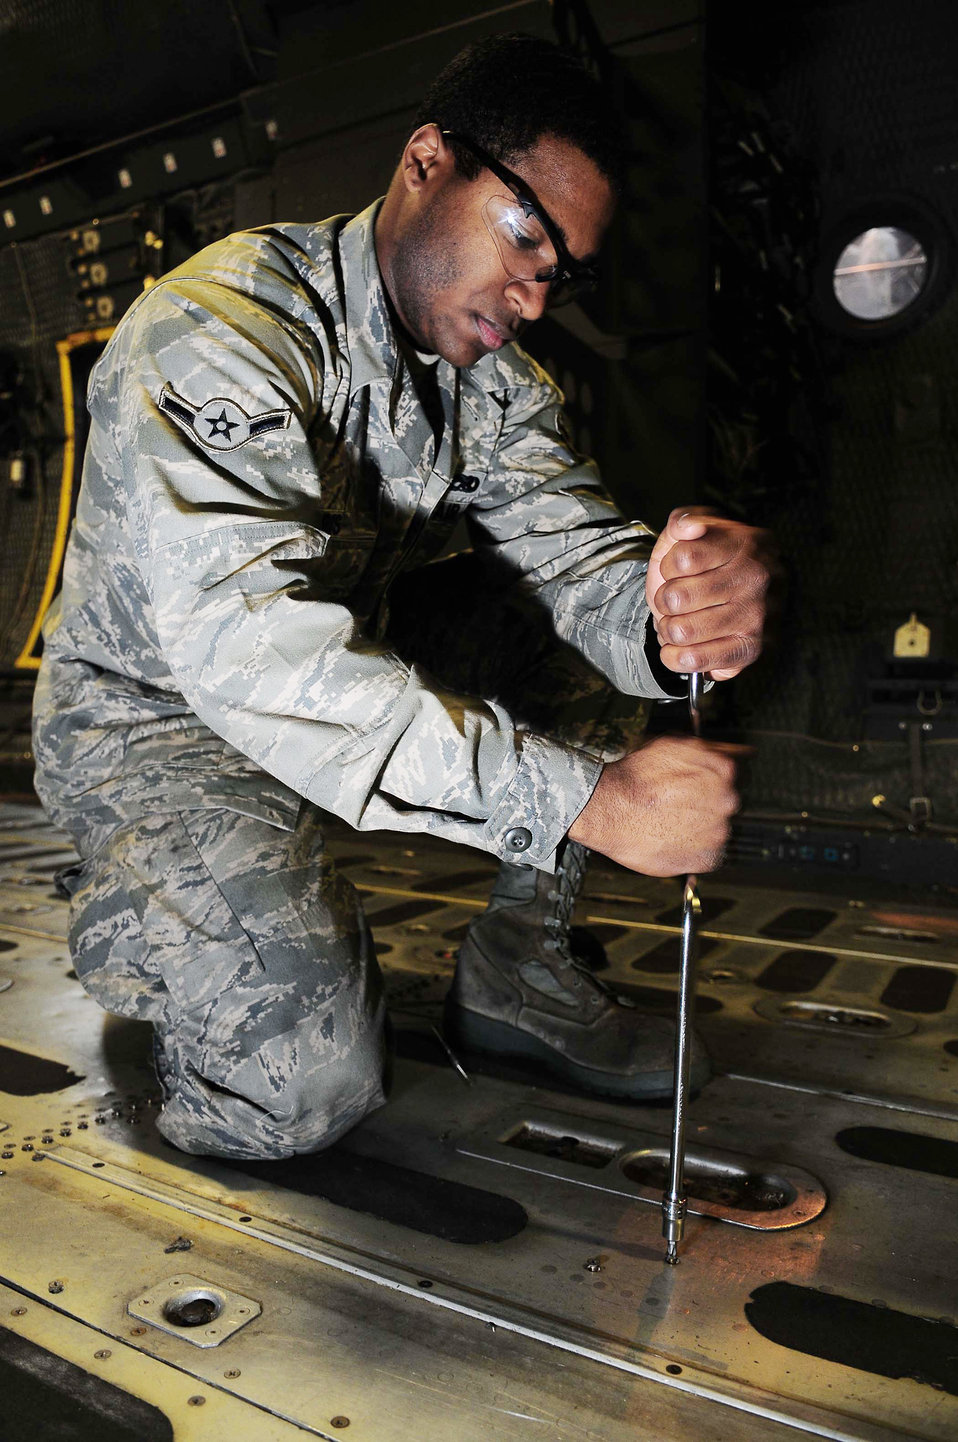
Yokota maintainers use AFSO21 to improve C-130 inspection process

Airman Shannon Harris pulls up a floor panel from a C-130 Hercules March 16, 2010, at Yokota Air Base, Japan. Airman Harris is a 374th Maintenance Squadron crew chief.